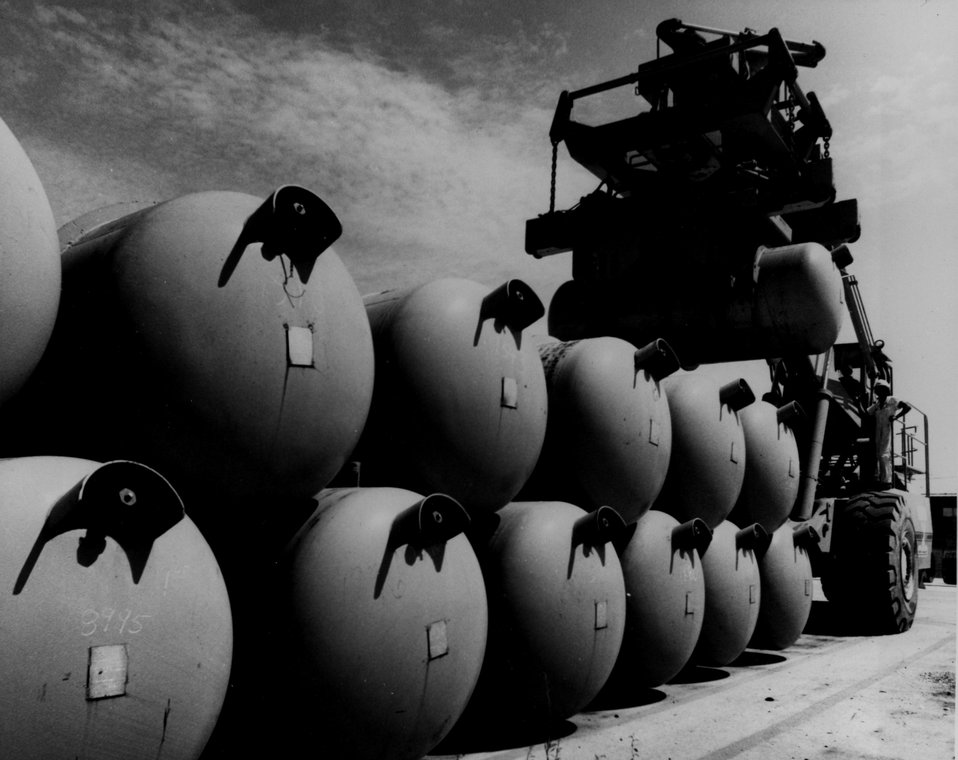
Uranium enrichment through gaseous diffusion. The large tanks weigh 10 tons and contain feed material, uranium hexaflouride, for the enrichment process carried out in the ERDA's gaseous diffusion plant at Oak Ridge, Tennessee; Pudacah, Kentucky and Portsmouth, Ohio. c. 1977